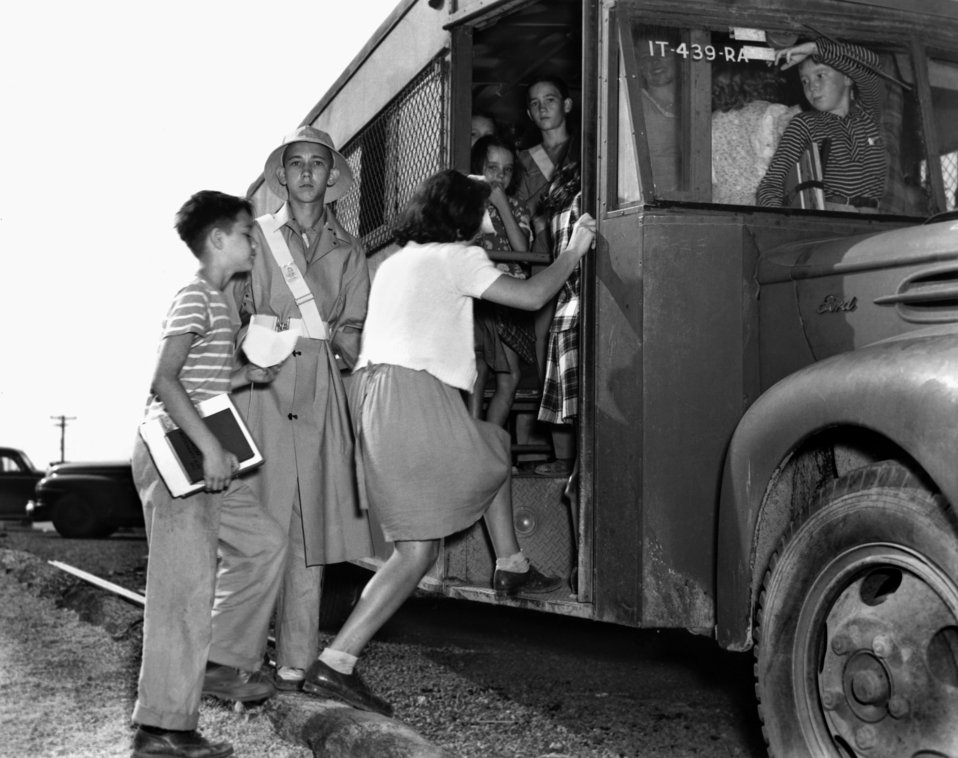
Highland View School Safety Patrol 1944 Oak Ridge

PRO-32-1 DOE photo Ed Westcott 9-15-1944 Oak Ridge Tennessee